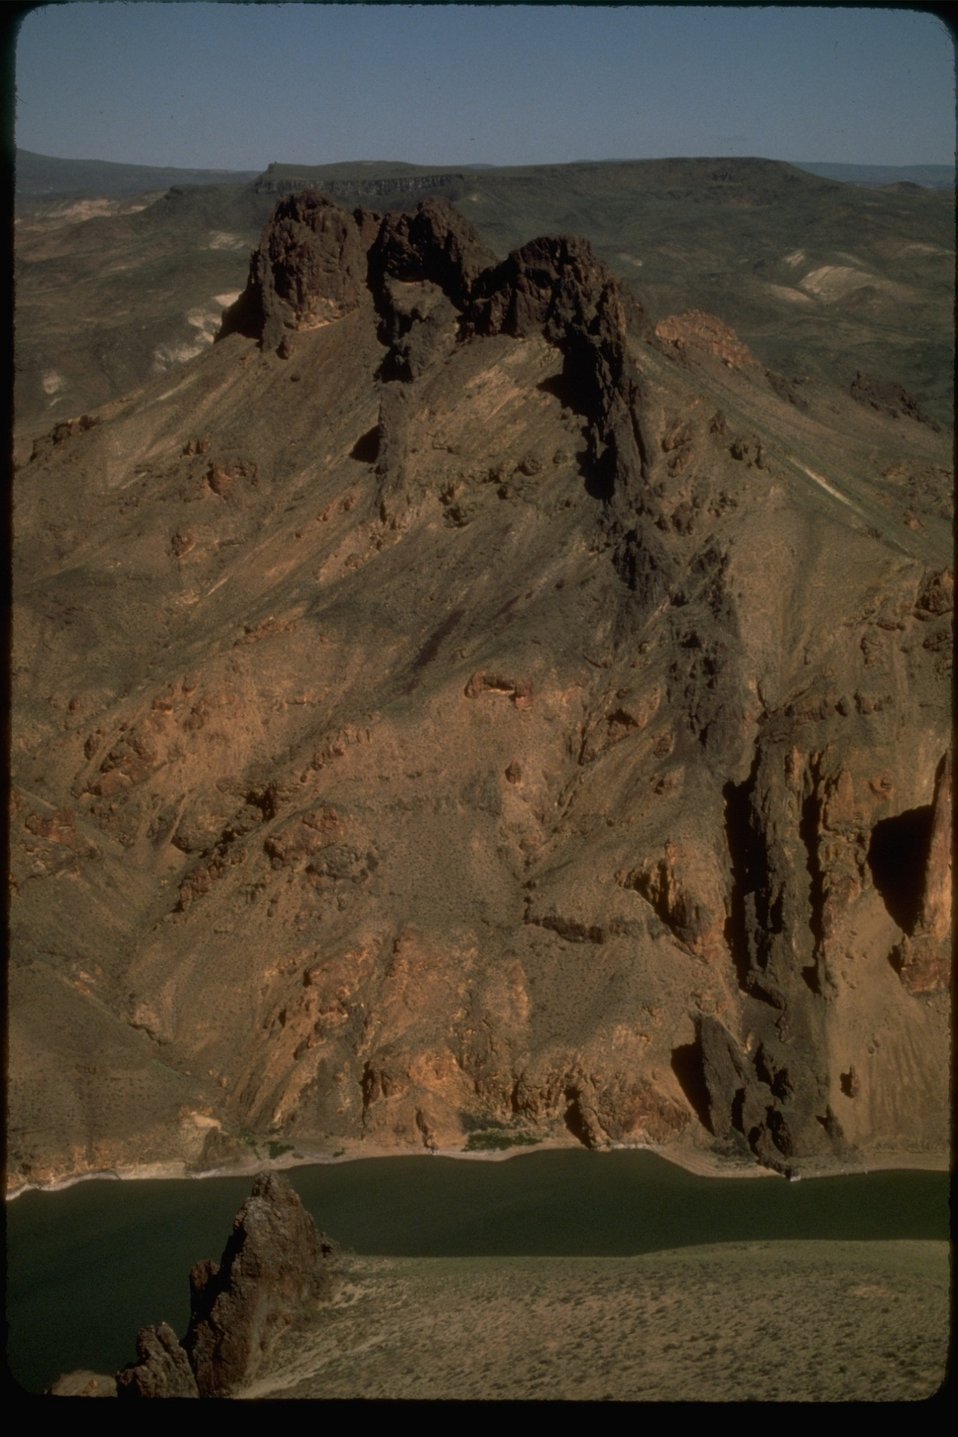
Dry Creek Buttes OR 3-56